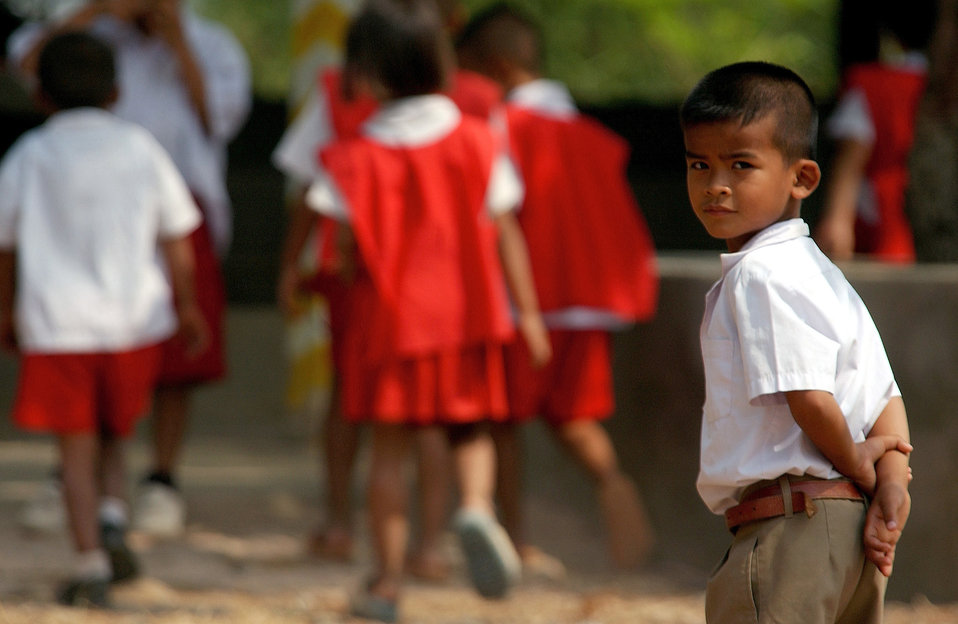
Allied forces at their best

KORAT AIR BASE, Thailand -- A local Thai student gets in line for the arrival of Cope Tiger '03 servicemembers who raised money, purchased and donated supplies to a rural Thai school. U.S. forces purchased more than $800 of medical and school supplies, athletic equipment, a refrigerator, color TV and video cassette recorder.